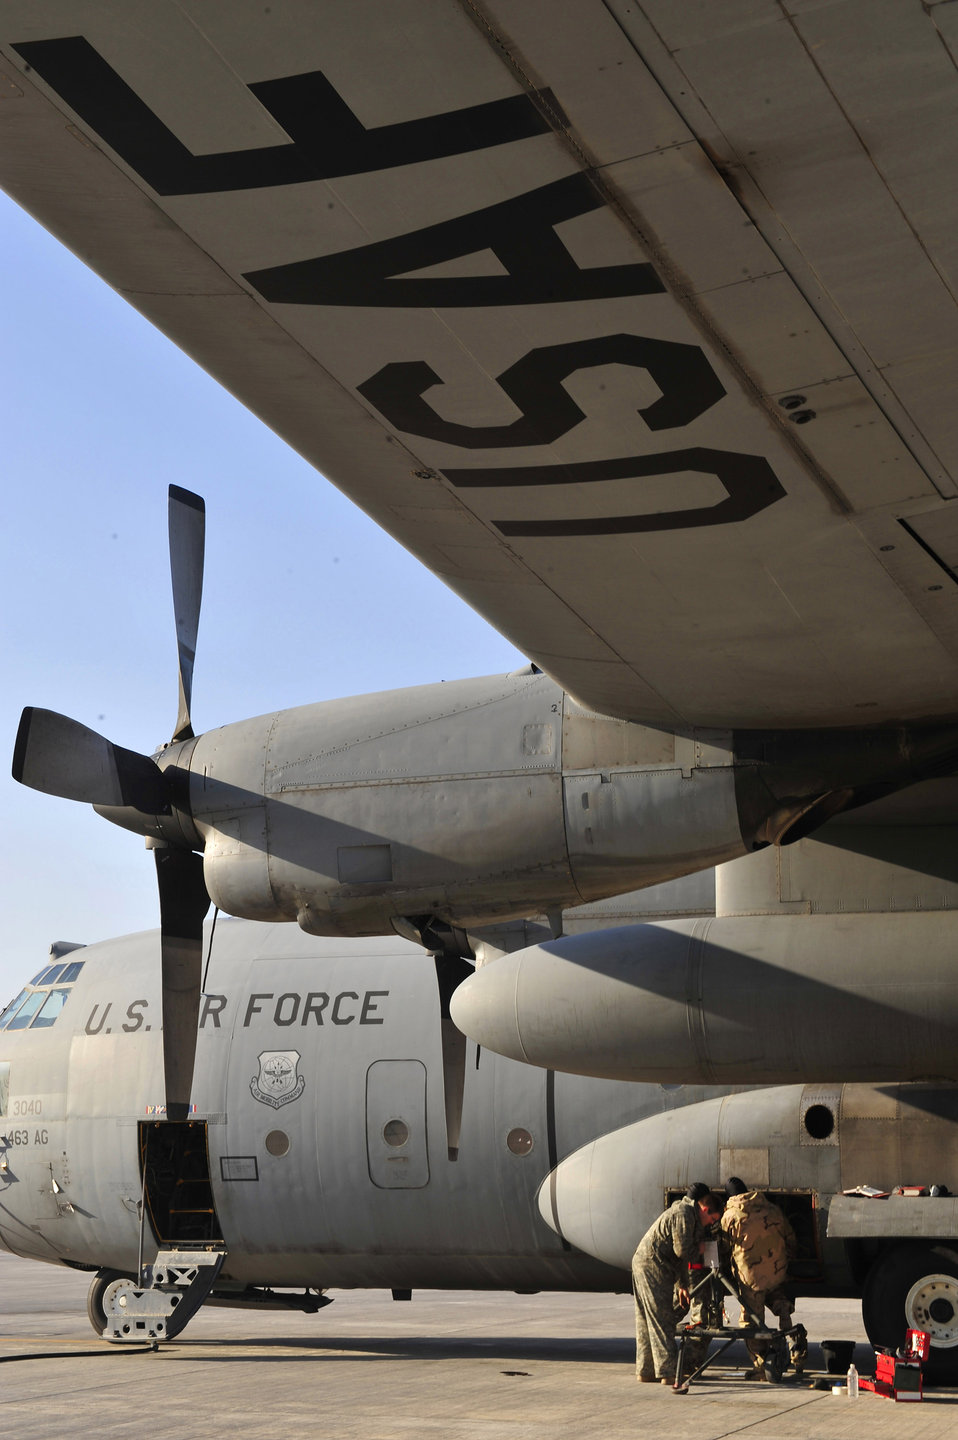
Maintaining mighty Hercules

Technical Sgt. Sam Harmon, Senior Airman Billy Howell and Airman 1st Class Ryan Sluss change an auxiliary power unit of a C-130 Hercules Jan. 16 at Joint Base Balad, Iraq. Sergeant Harmon and Airman Howell are 777th Expeditionary Aircraft Maintenance Unit jet engine mechanics. Airman Sluss is a 777th EAMU crew chief. They are all deployed from Little Rock Air Force Base, Ark.